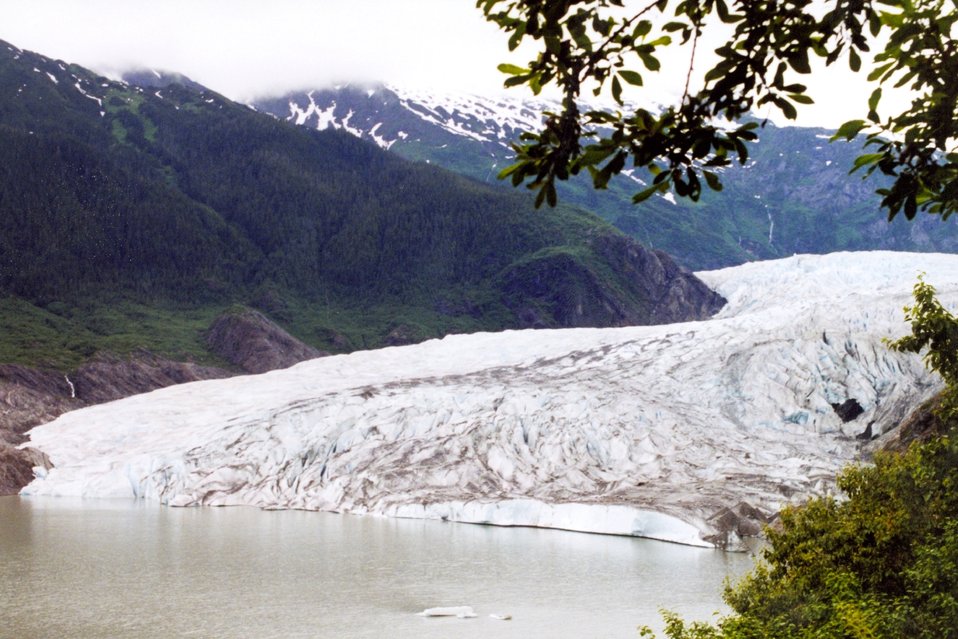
Mendenhall Glacier